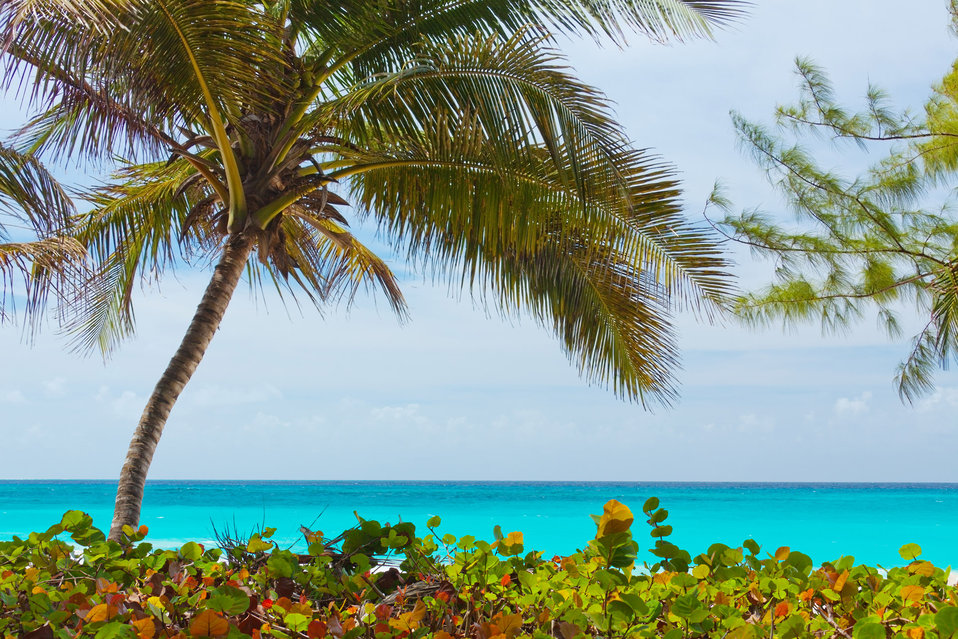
Tropical beach with palm tree and some vegetation.